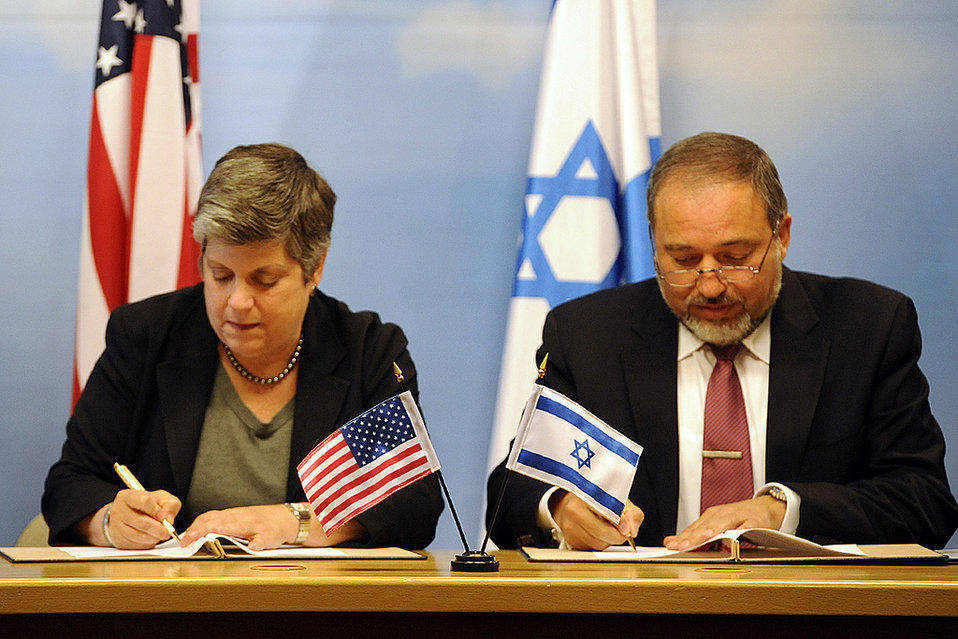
Secretary Napolitano Visits Israel

U.S. Secretary of Homeland Security Janet Napolitano visits Israel, May 20-22.